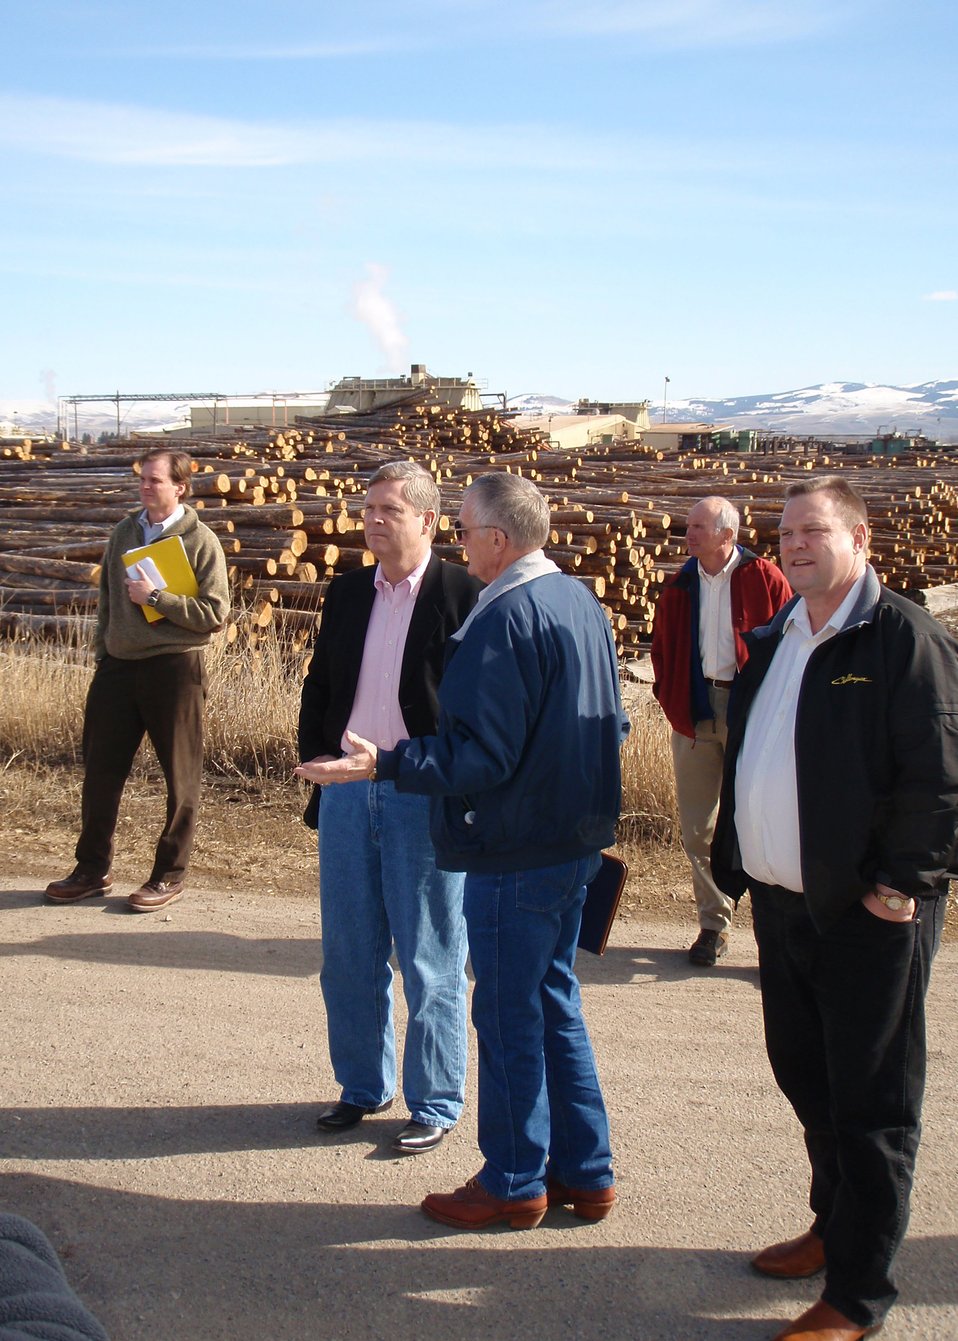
Agriculture Secretary Tom Vilsack visited Montana to discuss his vision for healthy forests and view the bark beetle infested areas in southwestern Montana. Agriculture Secretary Vilsack and U. S. Senator Jon Tester (D-MT) tour Sun Mountain Lumber Mill in Deer Lodge, MT with Sherman Anderson of Sun Mountain Lumber in west-central Montana on March 6, 2010. USDA photo 10di1257-07